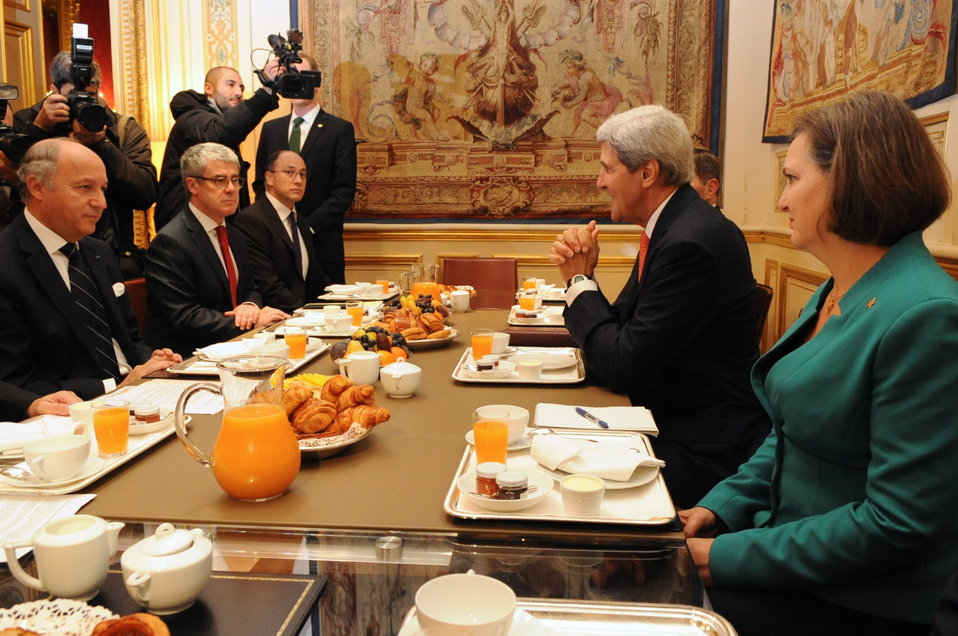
Secretary Kerry Meets With Foreign Minister Fabius

U.S. Secretary of State John Kerry meets with French Foreign Minister Laurent Fabius, accompanied by Assistant Secretary for European and Eurasian Affairs Toria Nuland, at the Ministry of Foreign Affairs in Paris, France on October 22, 2013.